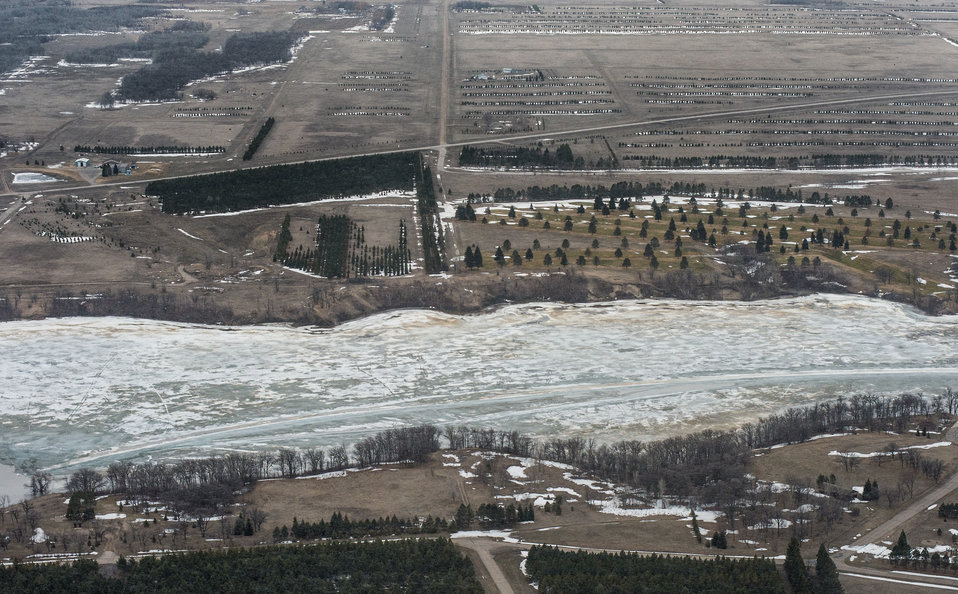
Renwick Dam, in Pembina County, ND, part of the Red River basin, on Wednesday, May 1, 2013. For information about this and other programs from the USDA Red River Basin Initiative (RRBI) please see www.mn.nrcs.usda.gov/news/features13/RRBI.html.